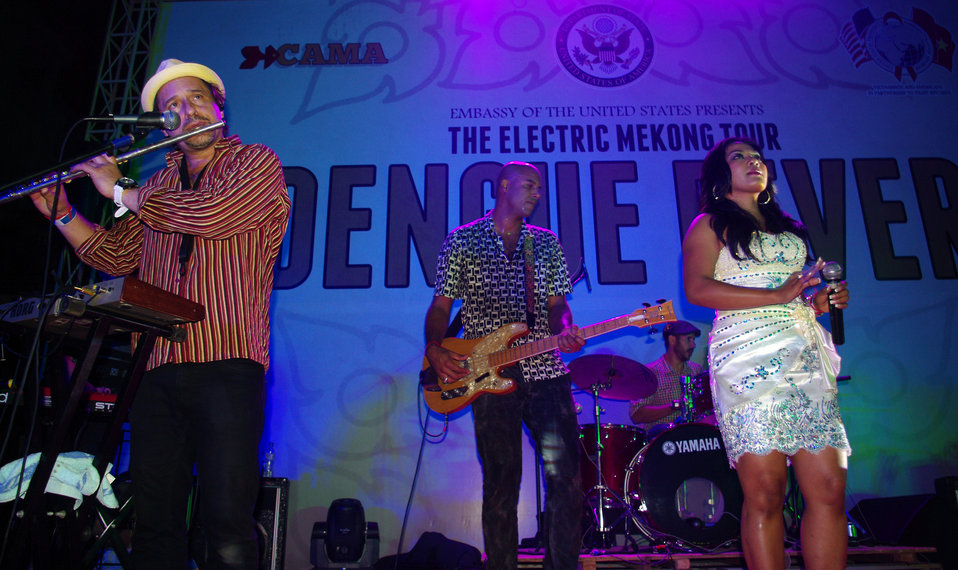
PEPFAR, U.S. Embassy Host Dengue Fever Concert in Hanoi